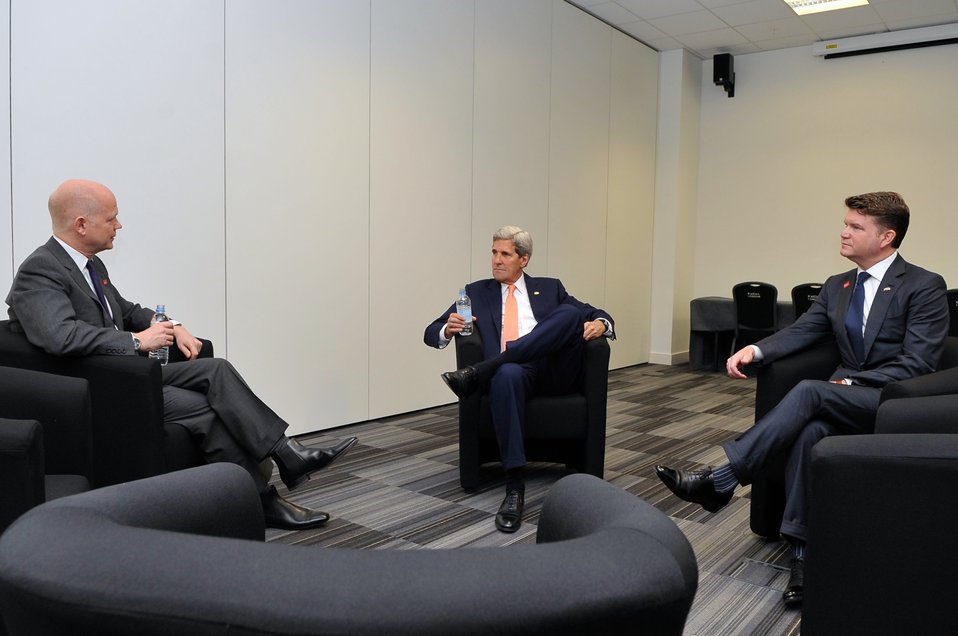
Secretary Kerry, Ambassador Barzun Chat with British Foreign Secretary Hague at Global Summit to End Sexual Violence in Conflict

U.S. Secretary of State John Kerry and U.S. Ambassador to the United Kingdom Matthew Barzun chat with British Foreign Secretary William Hague in London before joining the 2014 Global Summit to End Sexual Violence in Conflict, on June 13, 2014.